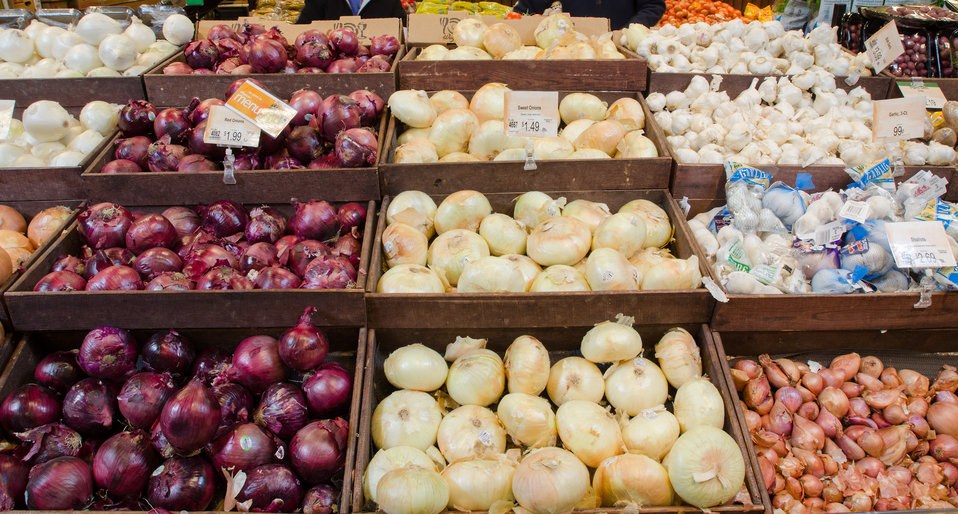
Onion and garlic produce at a grocery store in Fairfax, Virginia, on March 3, 2011.